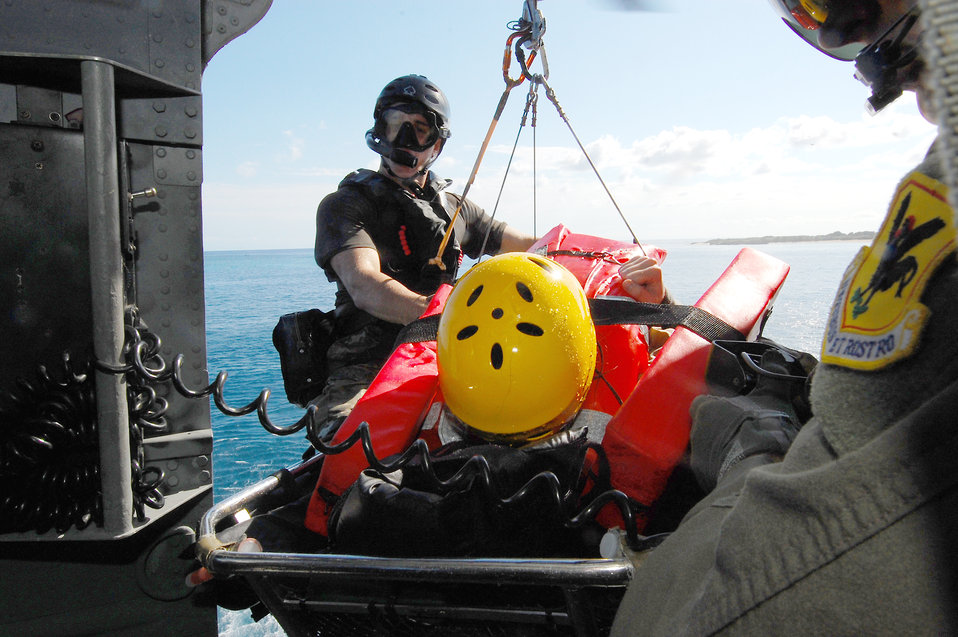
Keen Sword 2011

Senior Airman Nicholas Robillard (left) and Senior Airman Jeremy Garrett hoist a water